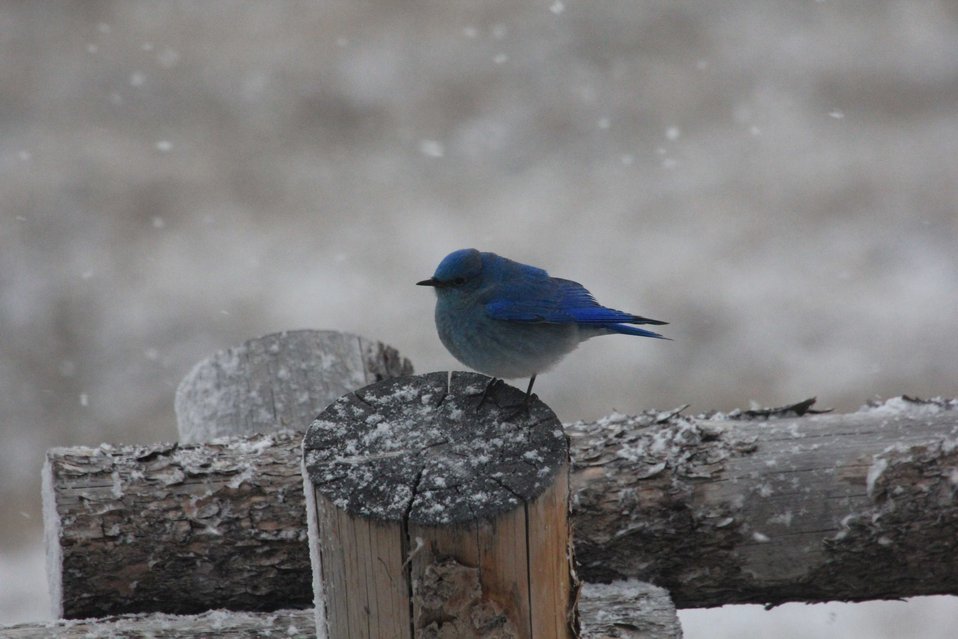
Harbingers of spring

Bluebirds are a sign of spring in Jackson Hole. Here, one waits out a snow flurry on the National Elk Refuge.

Credit: USFWS / Ann Hough, National Elk Refuge volunteer